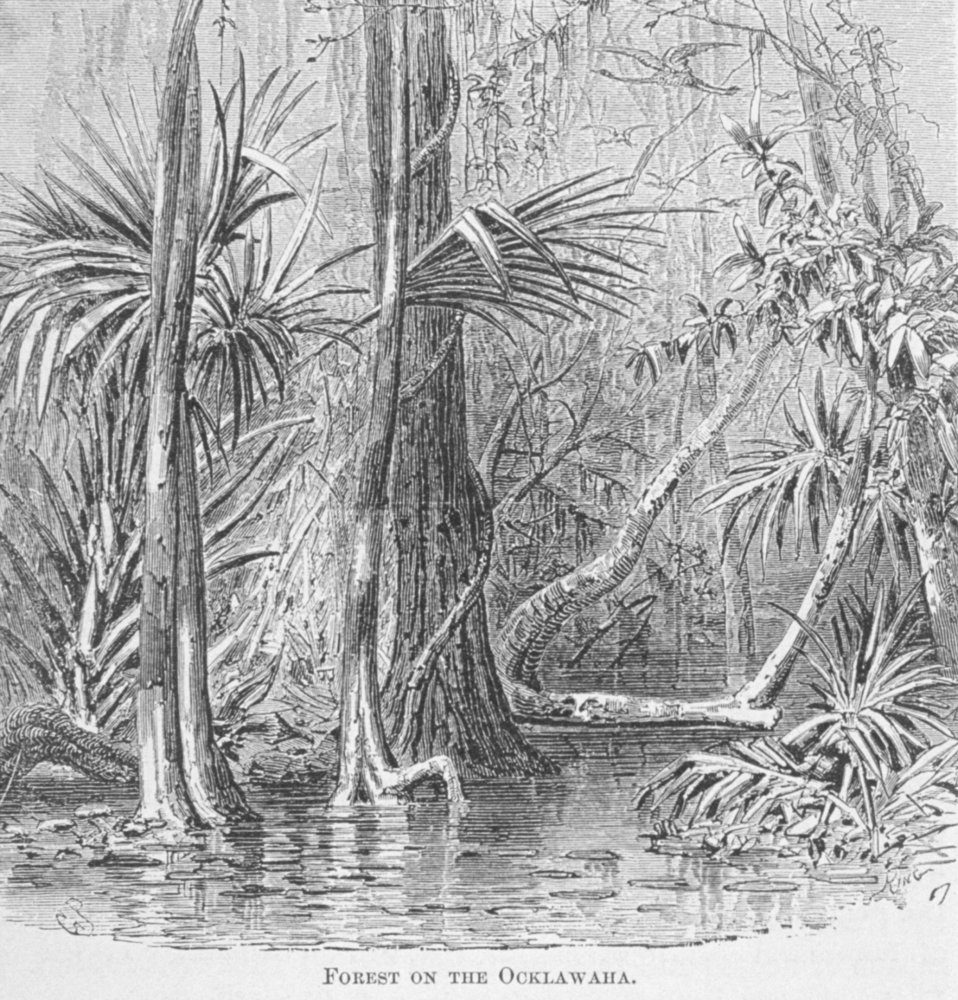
Forest on the Ocklawaha - in 'Florida for Tourists, Invalids, and Settlers' by George M. Barbour, 1881. Library Call No. F316 .B23 1881. In central, near Ocala.